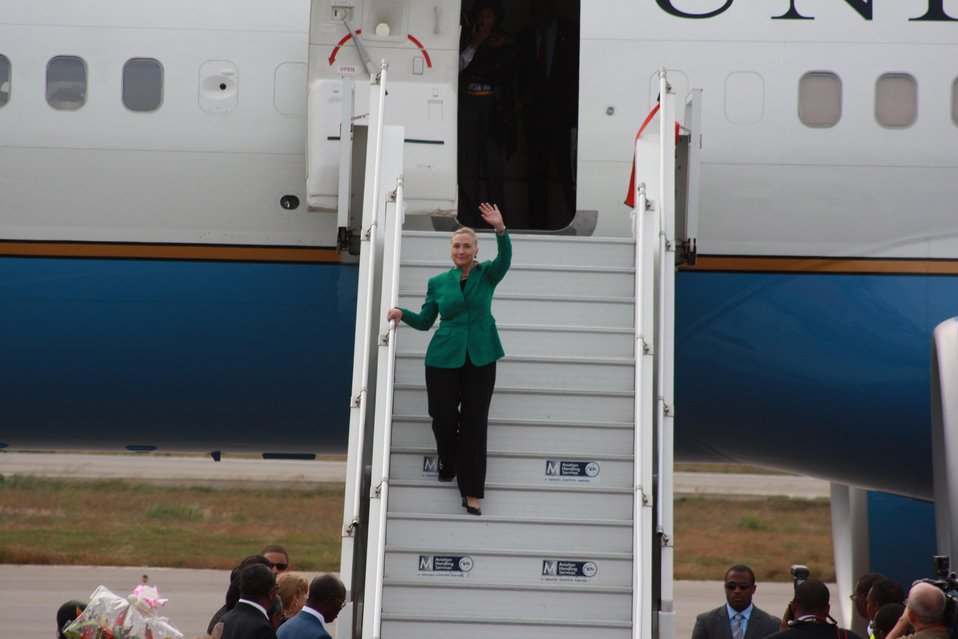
Secretary Clinton Arrives in Benin

U.S. Secretary of State Hillary Rodham Clinton waves upon arriving to Cotonou, Benin, on August 10, 2012.